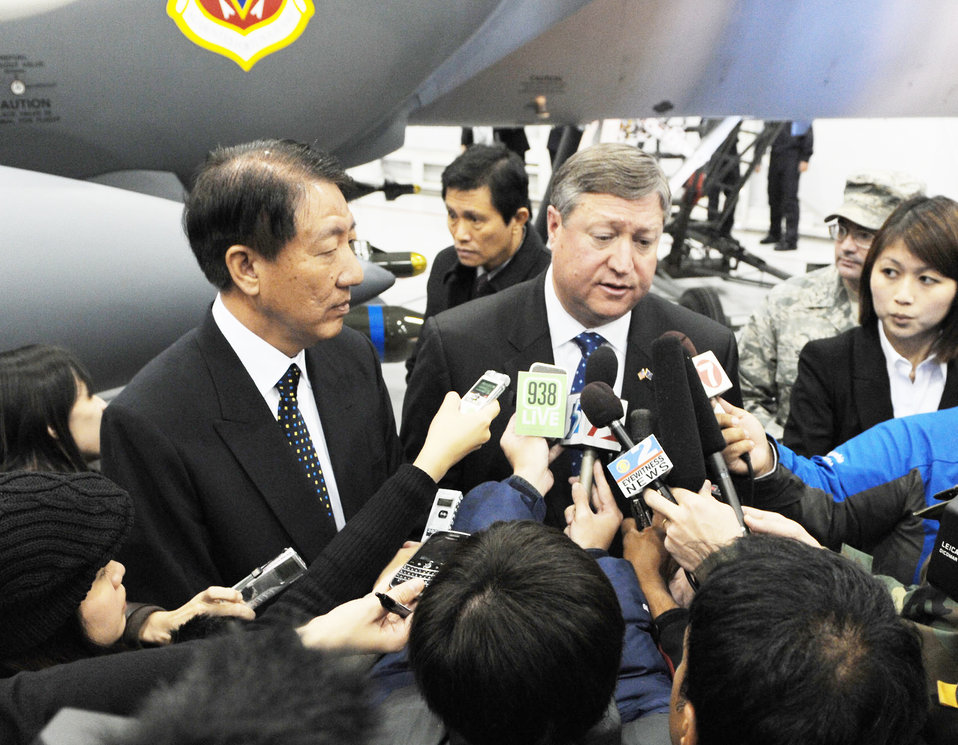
Singapore celebrates partnership with Air Force

Secretary of the Air Force Michael B. Donley and Republic of Singapore Deputy Prime Minister and Minister for Defence Teo Chee Hean speak to the media after the Peace Carvin V inauguration ceremony Nov. 19, 2009 at Mountain Home Air Force Base, Idaho. The Peace Carvin V detachment was established in October 2008 as the Air Force's 428th Fighter Squadron, and will operate up to 12 F-15SG fighter aircraft at the base for the next 25 years. The detachment of approximately 16 Airmen, 250 Republic of Singapore air force personnel, and 95 contractors to include pilots, weapons system officers and ground crew, will undergo air-to-air and air-to-ground training and development programs.